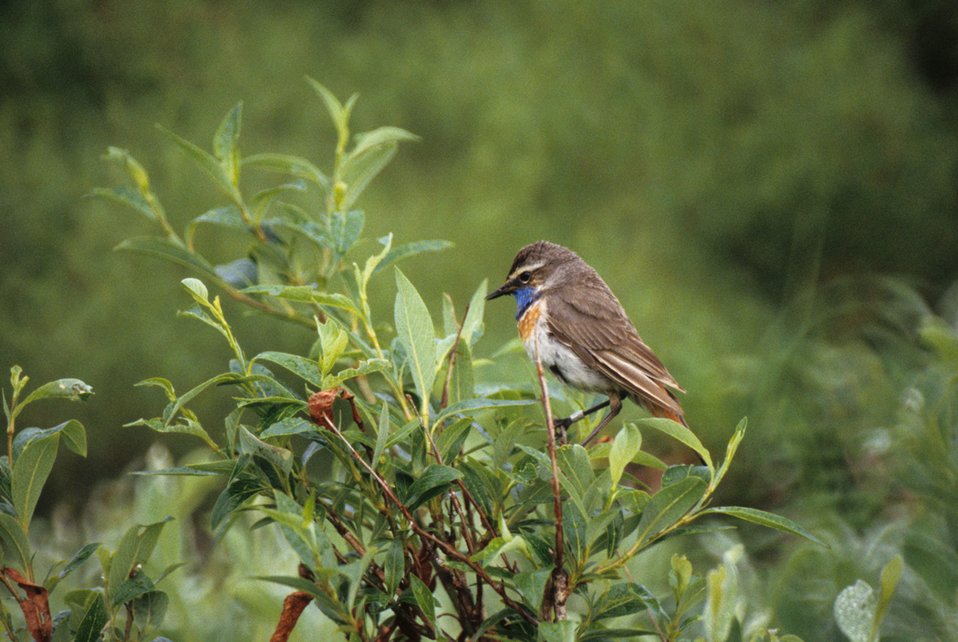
Bluethroat Male

The Bluethroat is one of the smallest members of the Thrush family measuring 5.5 (14 cm) inches in length. The colorful blue throat pattern distinguishes this breeding male from other species. Nests are found on the tundra in thickets near water. The Blue